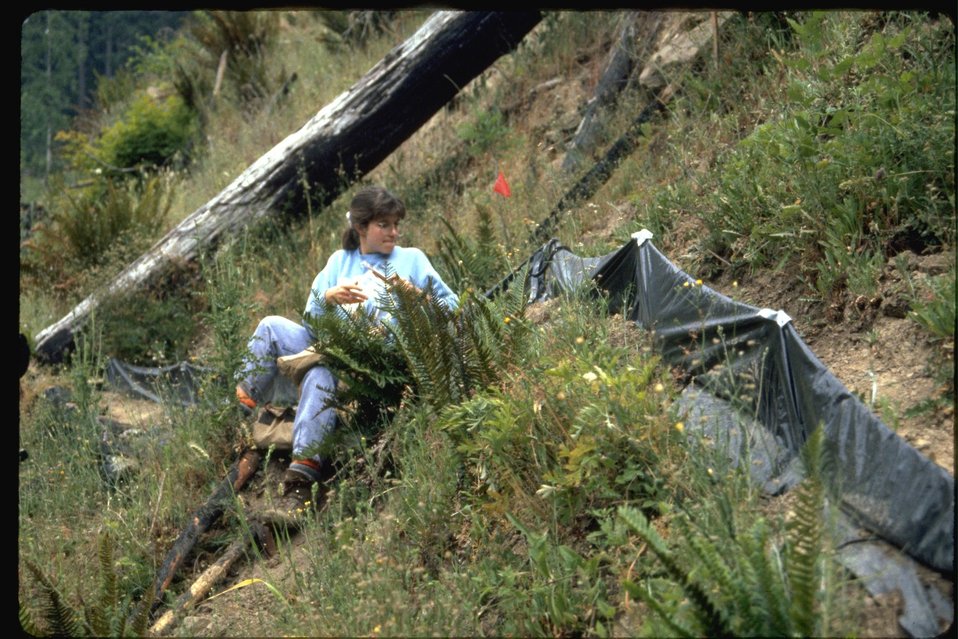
Wendy checking trap of amphibian study in clearcut.